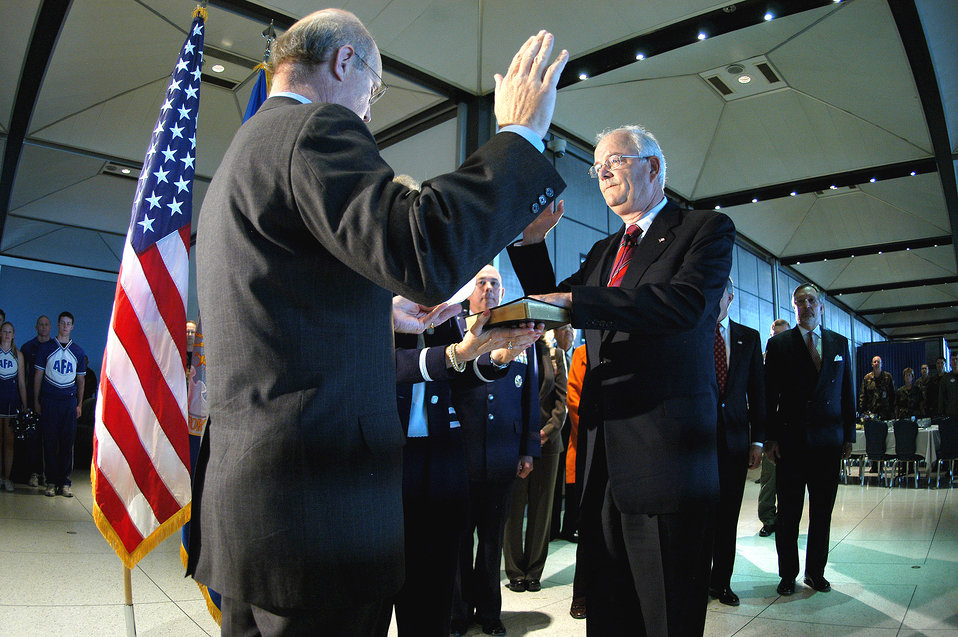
Wynne swears in

U.S. AIR FORCE ACADEMY, Colo. (AFPN) -- Secretary of the Air Force, Michael W. Wynne, takes the oath of office from Pete Geren during his swearing-in ceremony today at Mitchell Hall here. Mr. Geren has been the acting SECAF since July 29.